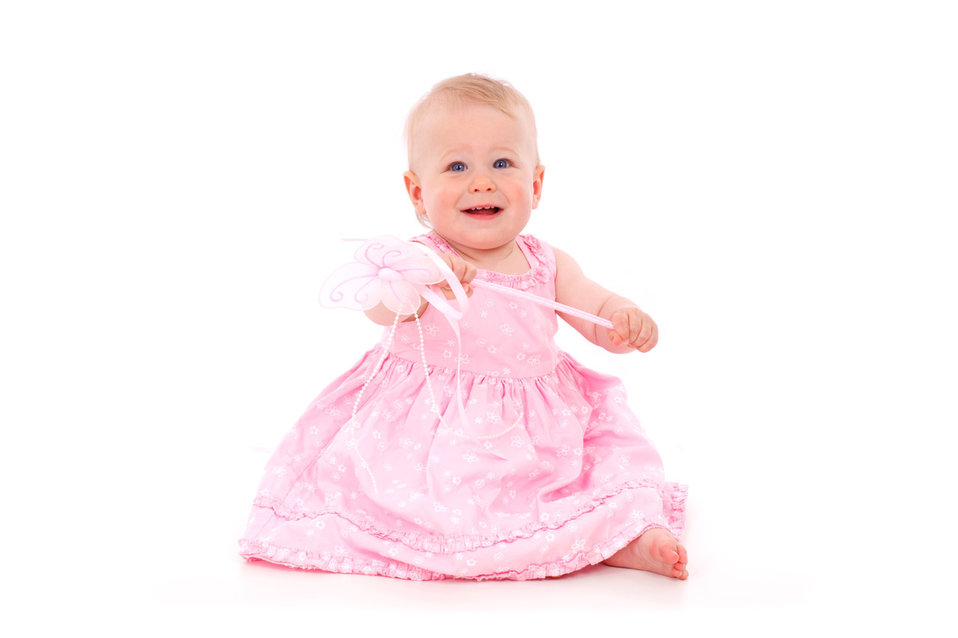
Baby girl in pink isolated on white background.